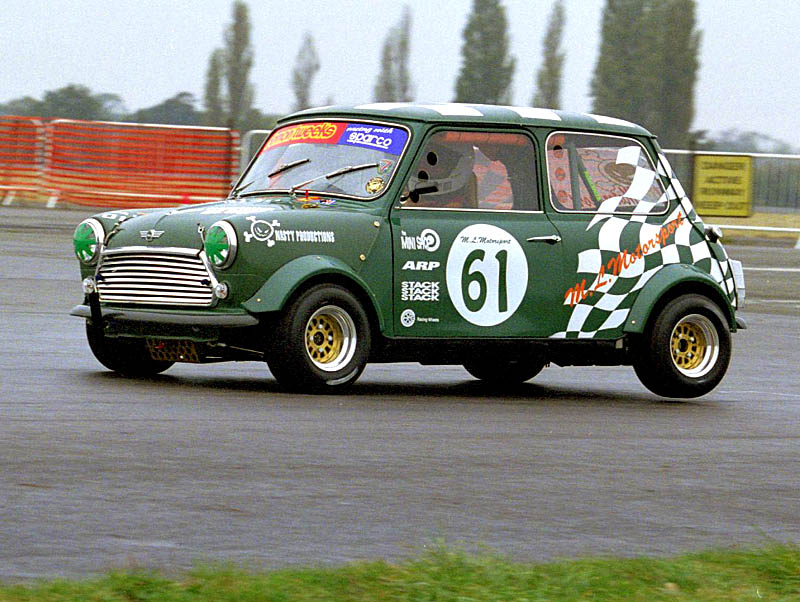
MLM Race car